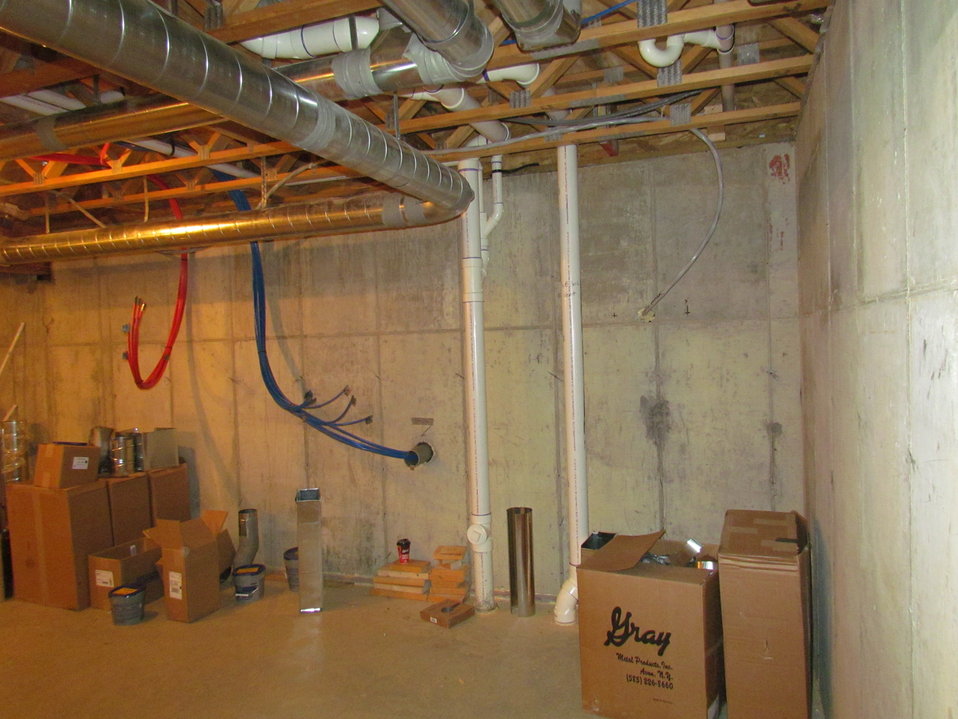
Net-Zero Energy Residential Test Facility – Photo of west basement wall of the NZERTF. The blue lines are plumbing lines that serve each individual water fixture within facility. The orange lines supply hot water to each individual water fixture within the facility.